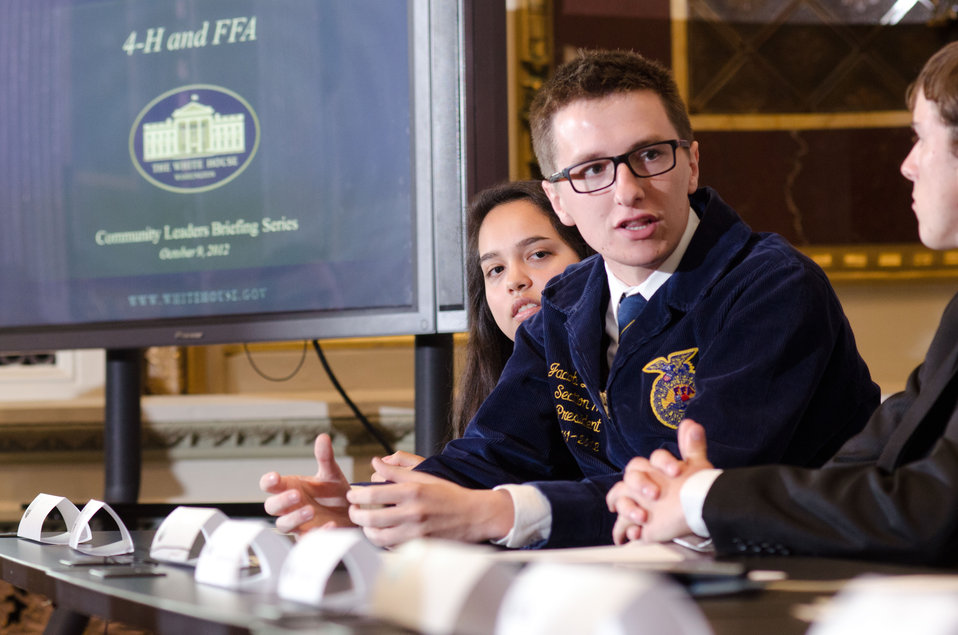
FFA Section 17 President and Youth Champions of Change panelist Jacob Dickey speaks during the Champions of Change Recognition event in the Indian Treaty Room of the Executive Office Building in Washington, D.C. on Tuesday, Oct. 9, 2012. The Champions of Change program was created to honor ordinary Americans doing great work in their communities. Each week, a different sector is highlighted and groups of Champions, ranging from educators, entrepreneurs and community leaders, are recognized for the work they are doing to serve and strengthen their communities.